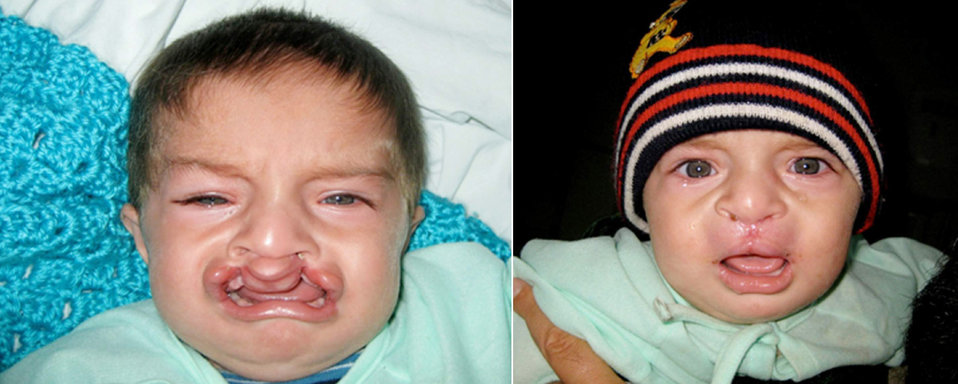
Plastic surgery not just performed for cosmetic reasons

These before and after photos show the results of a child who received surgery for a cleft lip and palate. Plastic surgeons from the 59th Medical Wing plastic surgery flight at Wilford Hall Medical Center at Lackland Air Force Base, Texas, perform an average of 35 to 40 cleft lip and palate surgeries in a two-week period during medical readiness training exercises in Central and South American countries.